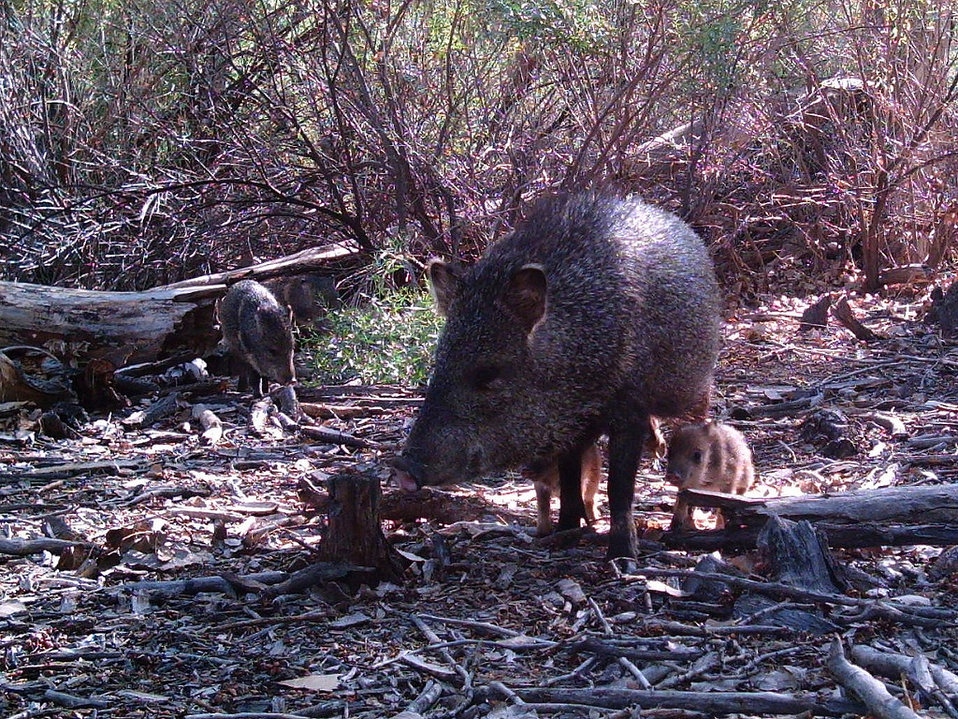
javelina with piglets

Bosque del Apache National Wildlife Refuge, NM
Camera trap project by Matthew Farley, Jennifer Miyashiro and James Stuart
Photo made available by J.N. Stuart, Creative Commons